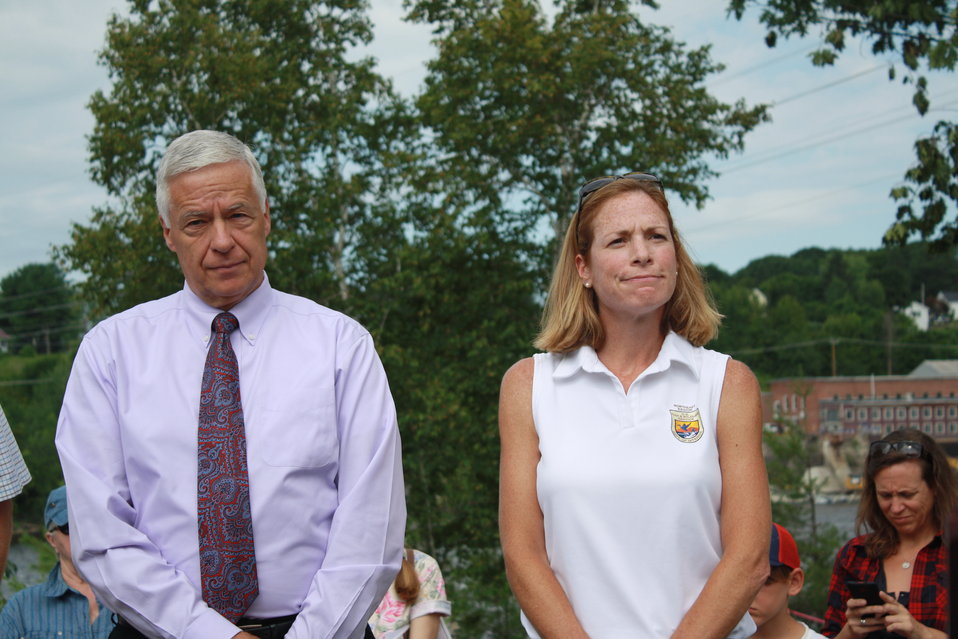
Veazie Dam Removal

U.S. Congressman Mike Michaud and U.S. Fish and Wildlife Service Northeast Regional Director Wendi Weber.